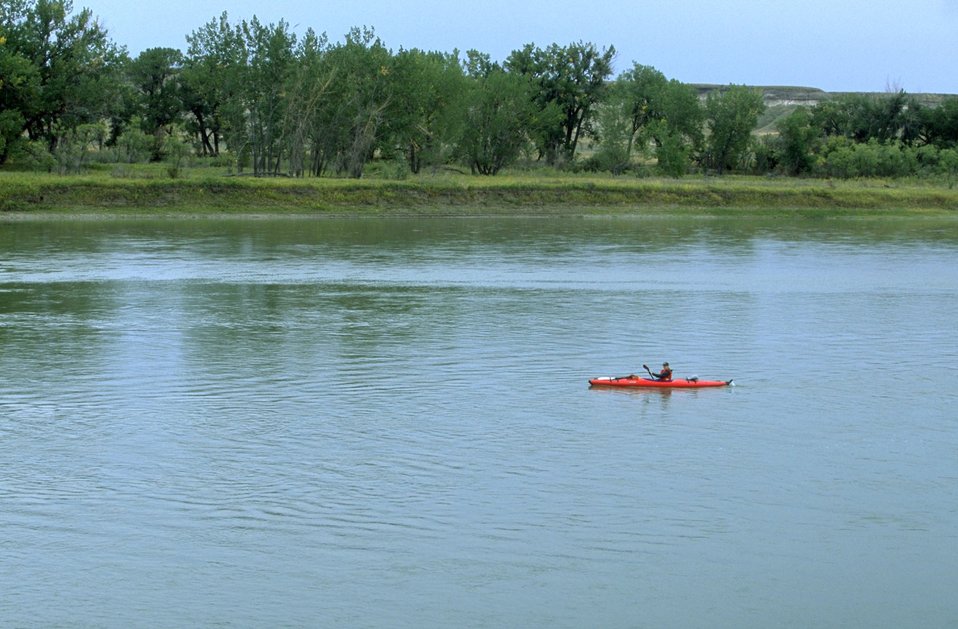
Floating the Upper Missouri River